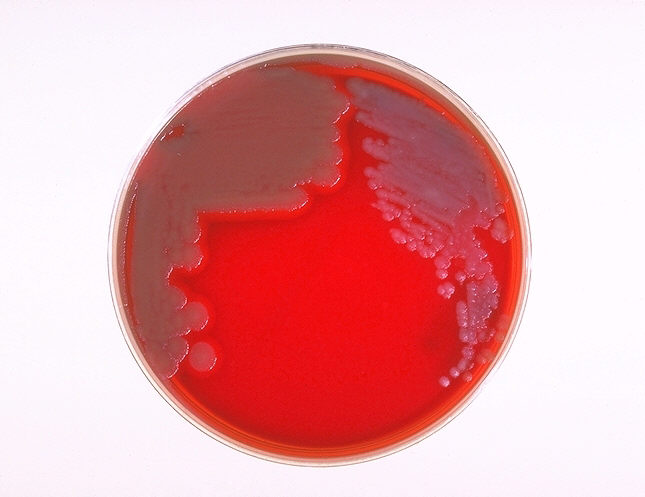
Sheep blood agar plate culture of Bacillus anthracis and Bacillus cereus.